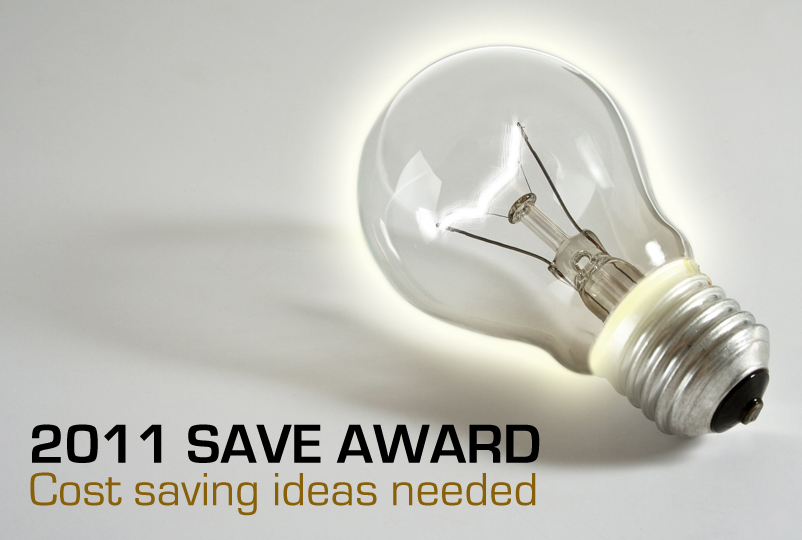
2011 SAVE AWARD